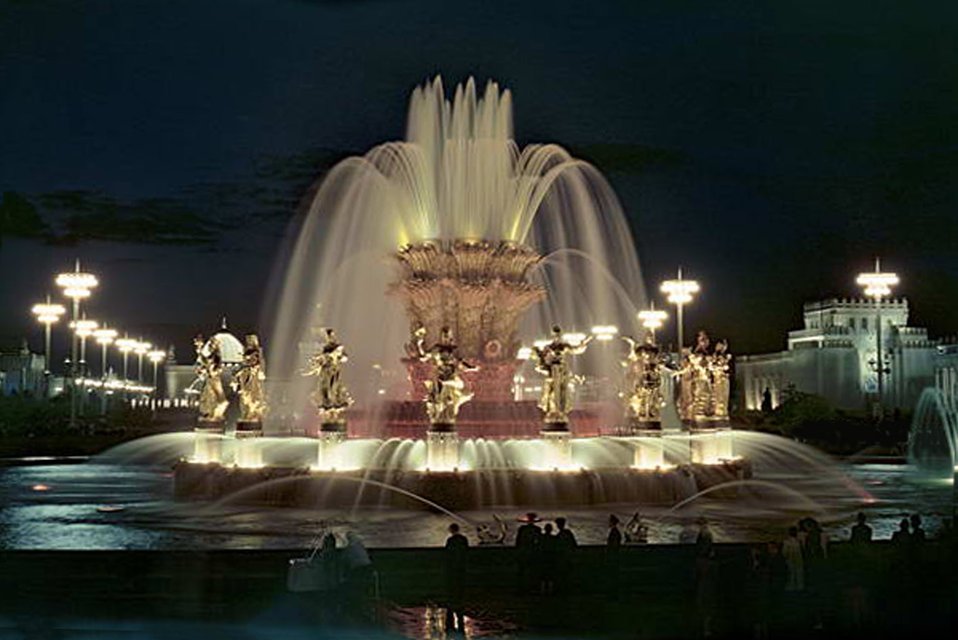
Русский: так выглядел фонтан до 1960- х ночью